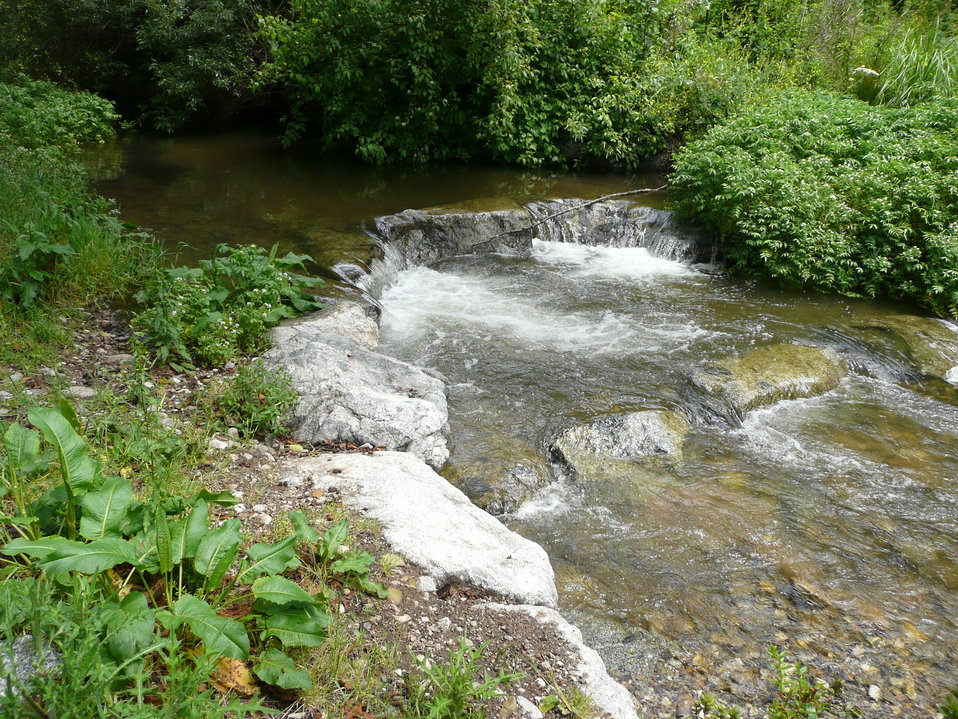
San Vicente

Central California area.